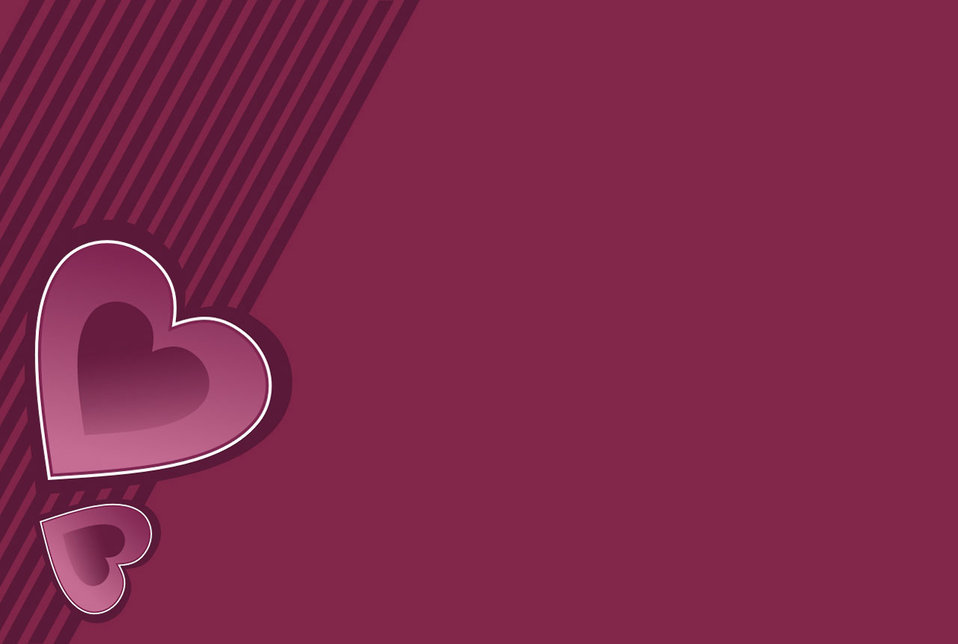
Dark pink heart background

Dark pink background with two hearts.